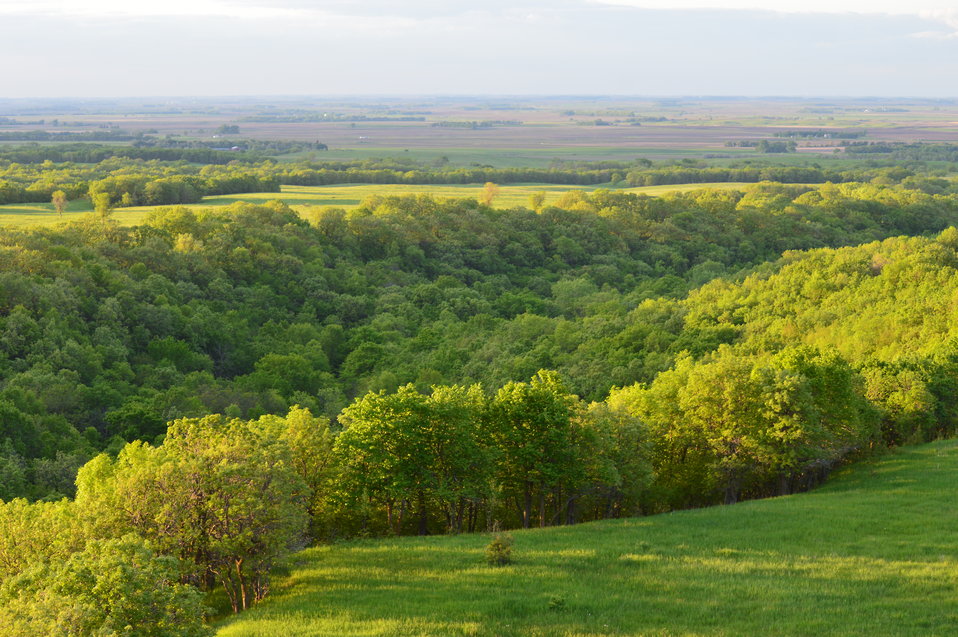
Aerial view of the Dakotas

Landscapes of the Prairie Pothole Region in North and South Dakota.